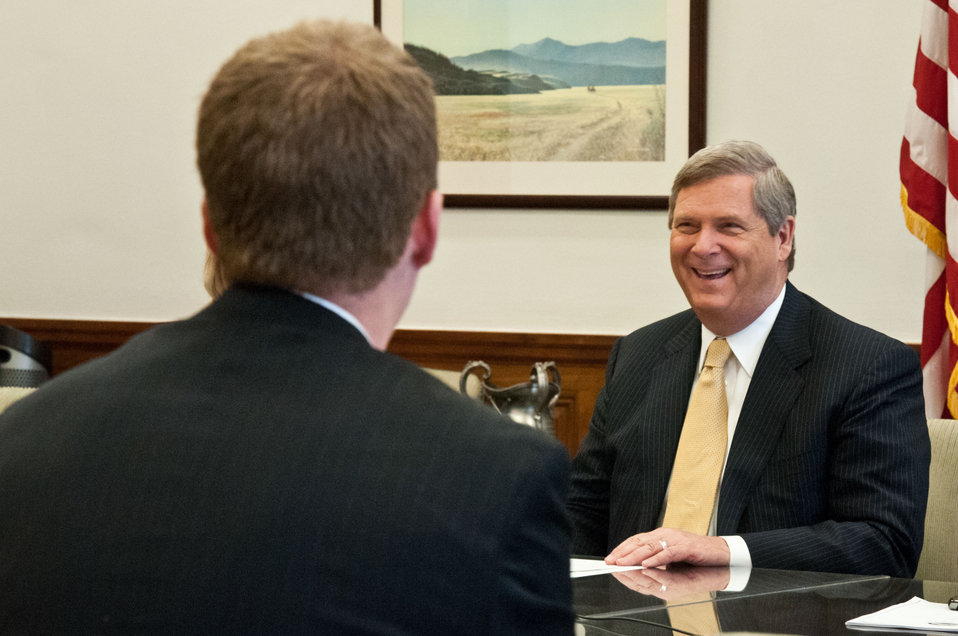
Agriculture Secretary Tom Vilsack (right) responds to a remark by Leif Oveson, National Telecommunications Cooperative Association during a conference call with other Rural Council stakeholders to discuss the economy of rural America at the United States Department of Agriculture in Washington, D.C., on Thursday, April 26, 2012.